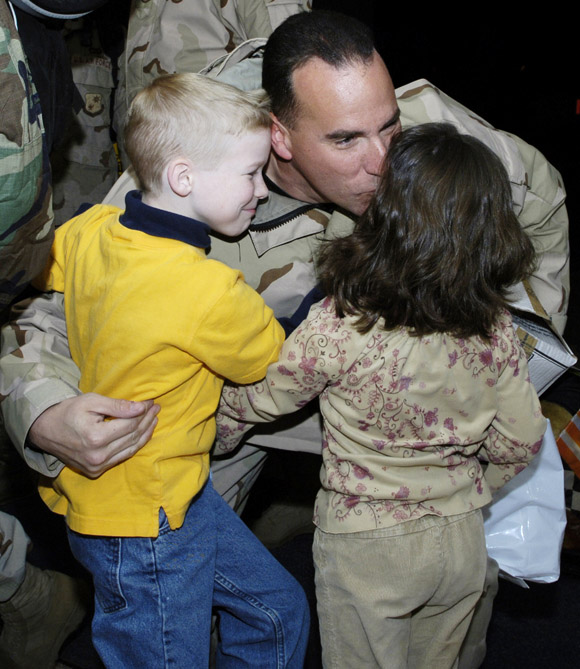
Home again

MCGUIRE AIR FORCE BASE, N.J. (AFPN) -- Tech. Sgt. Jeffrey Mitchell kisses his 6-year-old daughter, Silkie, and hugs his 8-year-old son, Daniel, when he returned from Pakistan. Sergeant Mitchell returned home after two months supporting Pakistan earthquake relief efforts.